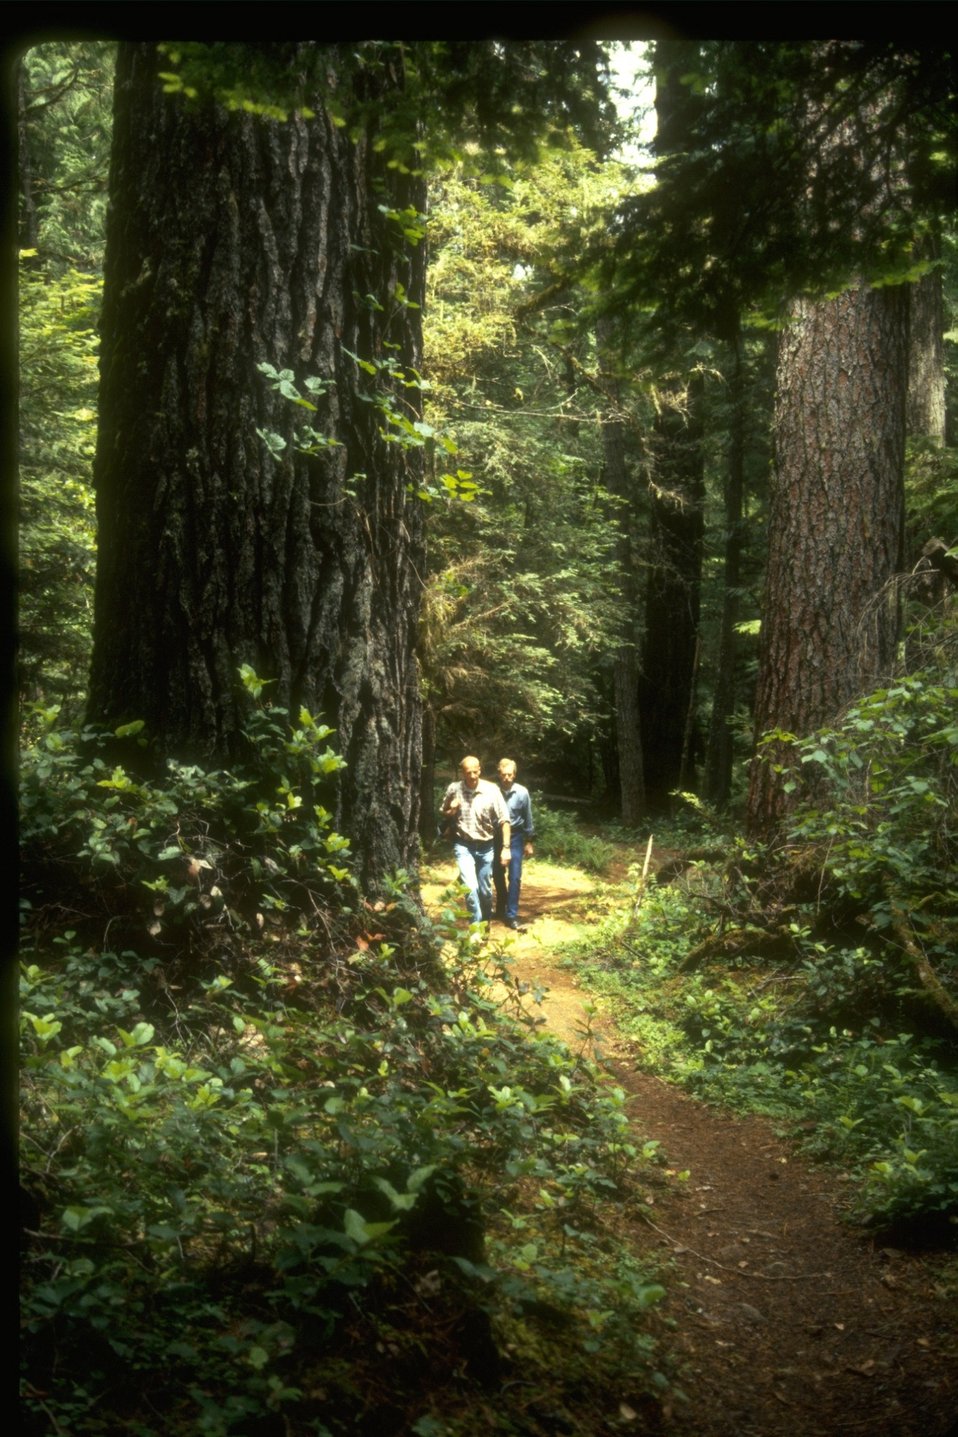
Hiker on the North Umpqua Trail.